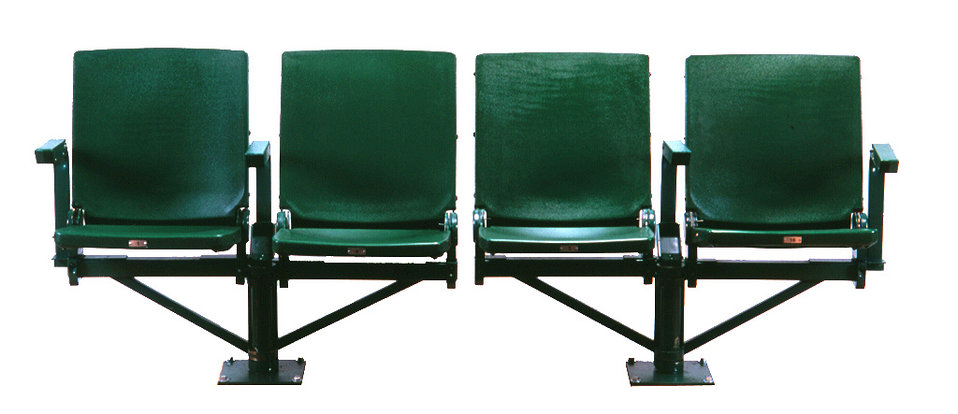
This was one of five images (PHIL# 9139 - 9143), depicting four rotating, folding stadium seats in the 'open' position, which provided a unique level of flexibility for patrons of spectator events, where fixed seats were typically installed. Designed to provide the same range of seating options to people who use wheelchairs or scooters, they were able to be installed in either newly constructed or modified projects. The design combined two seat assemblies mounted and articulated from a single post. Each seat was capable of being independently folded and rotated. When two seats were in the "stowed" position, a wheelchair parking location was created (see PHIL# 9140). This flexibility allowed people using wheelchairs to sit with friends and family members, and therefore, feel integrated with the general public. A walking person could also use a seat, fold it up, or swing it to the side, and in this way, exit the row or aisle behind, while not disturbing the occupants of adjacent seats.